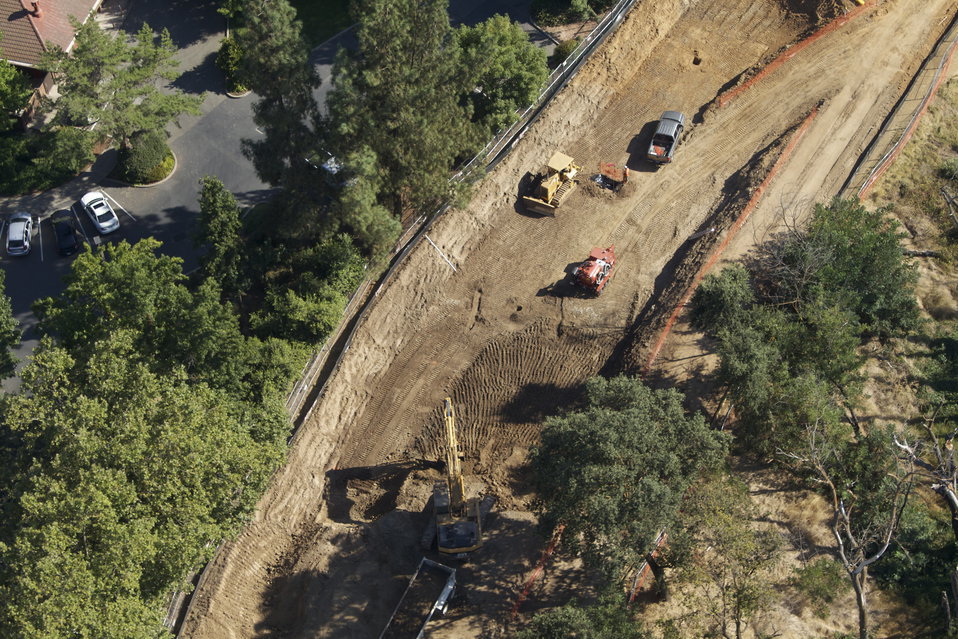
American River levee improvement construction

Construction continues on an American River levee improvement project in Sacramento, Calif., Sept. 8, 2011. Under the American River Common Features project, funded in part by the American Recovery and Reinvestment Act of 2009, the U.S. Army Corps of Engineers Sacramento District is installing a slurry wall in the levee to help strengthen it and make it harder for water to leak through.